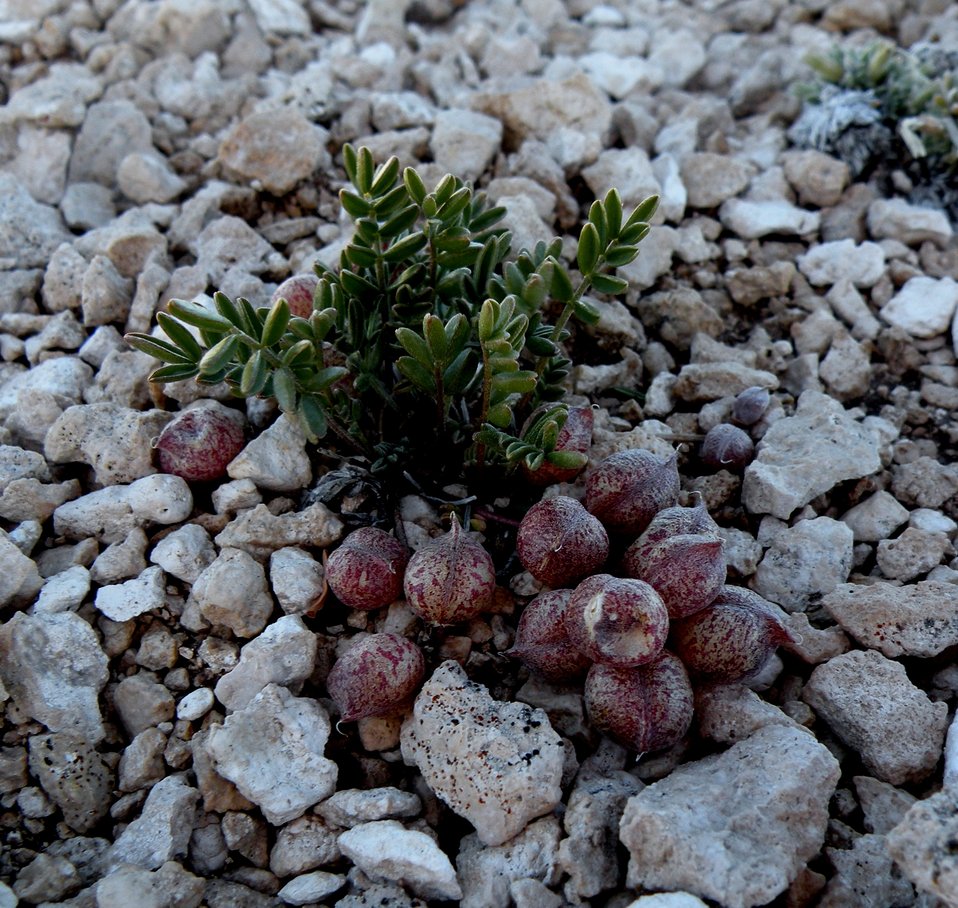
Heliotrope Milkvetch (Astragalus montii) is a rare milkvetch restricted to alpine areas in central Utah where it is found on windblown ridges between 10,500 and 11,000 feet in elevation. Endemic to Sanpete and Sevier counties in Utah, this plant is listed threatened.